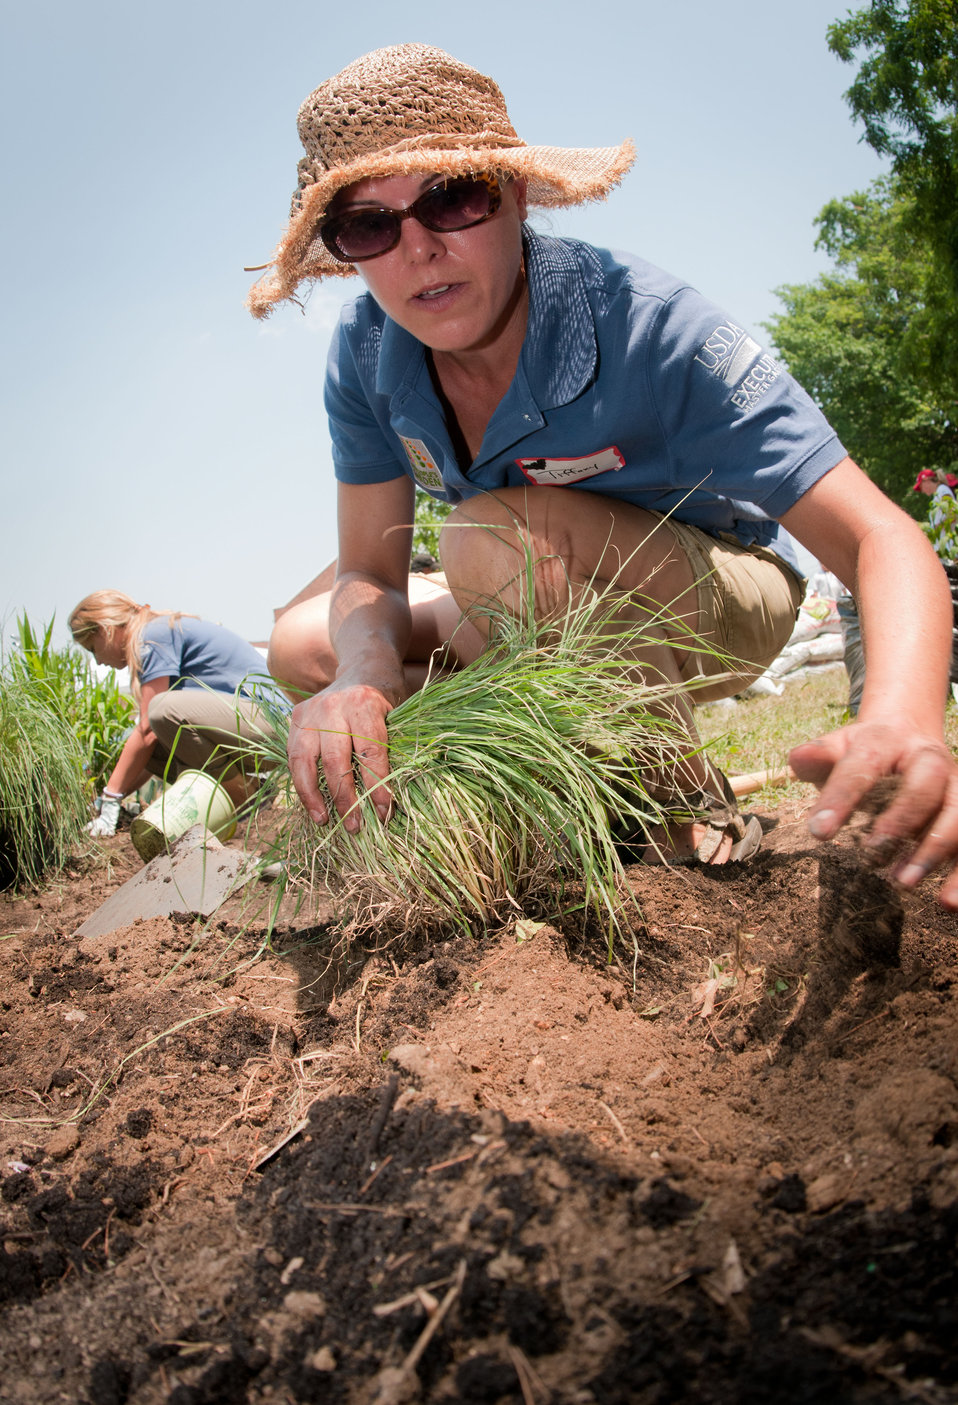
U.S. Department of Agriculture Farm Services Agency Agricultural Economist and Executive Master Gardner Tiffany Arthur plants a native grass plant in the People’s Garden, at William B. Powell Elementary School on Thursday, June 9, 2011 in Washington, DC. Volunteers from U.S. Department of Agriculture People’s Garden Executive Master Gardener program and Washington Capitals hockey organization, along with defenseman Jeff Schultz, and mascot Slapshot transformed a grassy corner of the school playground into a habitat garden and outdoor learning area. Executive Master Gardeners led the volunteer project teams. The Washington Capitals donated new tools; tool shed; garden materials; lunch; most of the volunteers and more. The completed projects included a walking path; tiling of garden plots; planting a bird habitat garden, pollinator garden and native grasses; caterpillar and butterfly plaques; hummingbird and bat house, and tool shed. The garden will later include a picnic area, outdoor classroom, hummingbird garden, Monarch watch garden, native bee garden, and birdbath. USDA challenges its employees to establish People's Gardens at USDA facilities worldwide or on this case, help communities create gardens. People's Gardens vary in size and type, but all have a common purpose - to help the community and the environment.